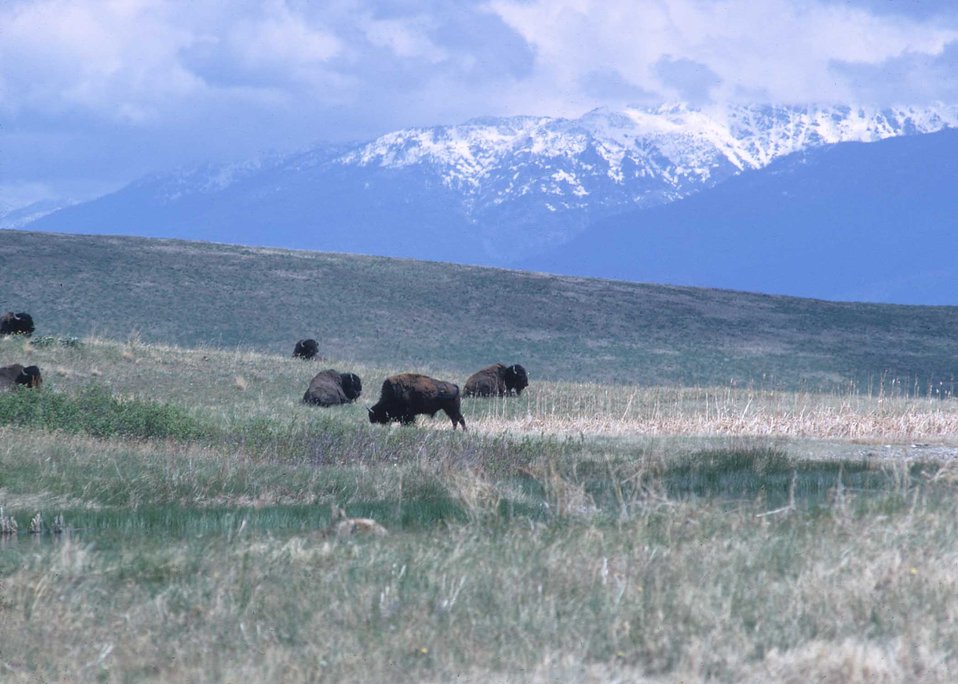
Buffalo grazing on the National Bison Range.